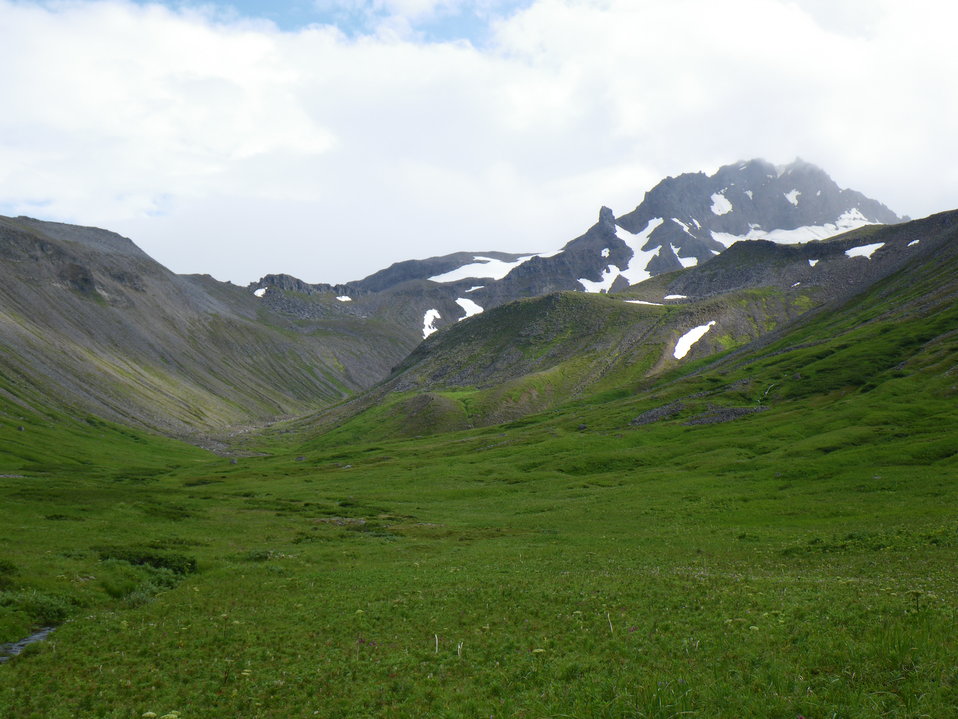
Izembek Wilderness

Wilderness near Frosty Peak, Izembek National Wildlife Refuge
Photo by Kristine Sowl,
USFWS, Public Domain